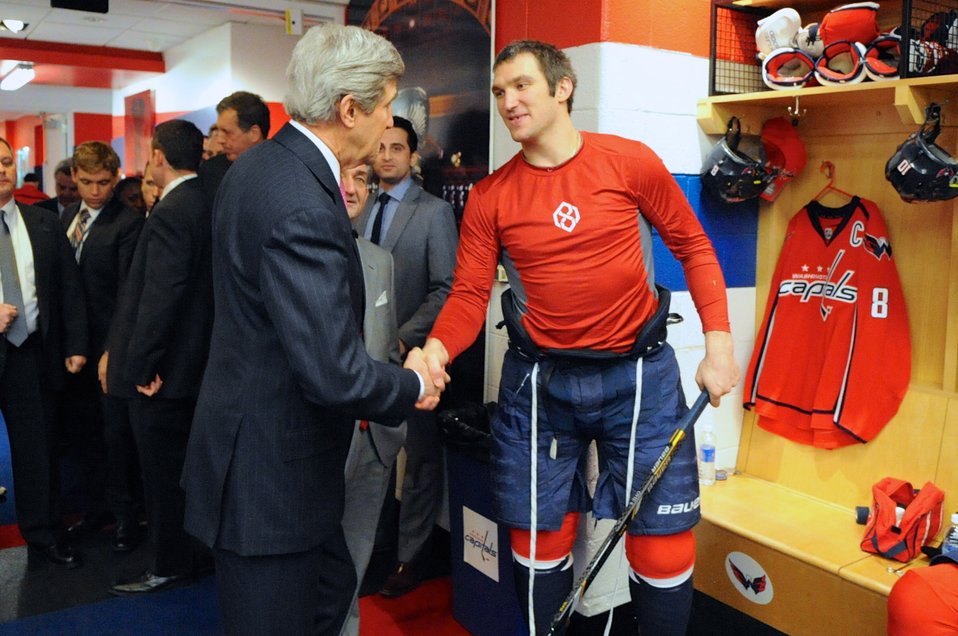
Secretary Kerry Meets Capitals Star Ovechkin Before Olympics Send-Off

U.S. Secretary of State John Kerry greets Washington Capitals star -- and Russian Olympian -- Alex Ovechkin before dropping the puck and sending off Olympic hokcey players as the Caps played the Winnipeg Jets at the Verizon Center in Washington, D.C., on February 6, 2014.